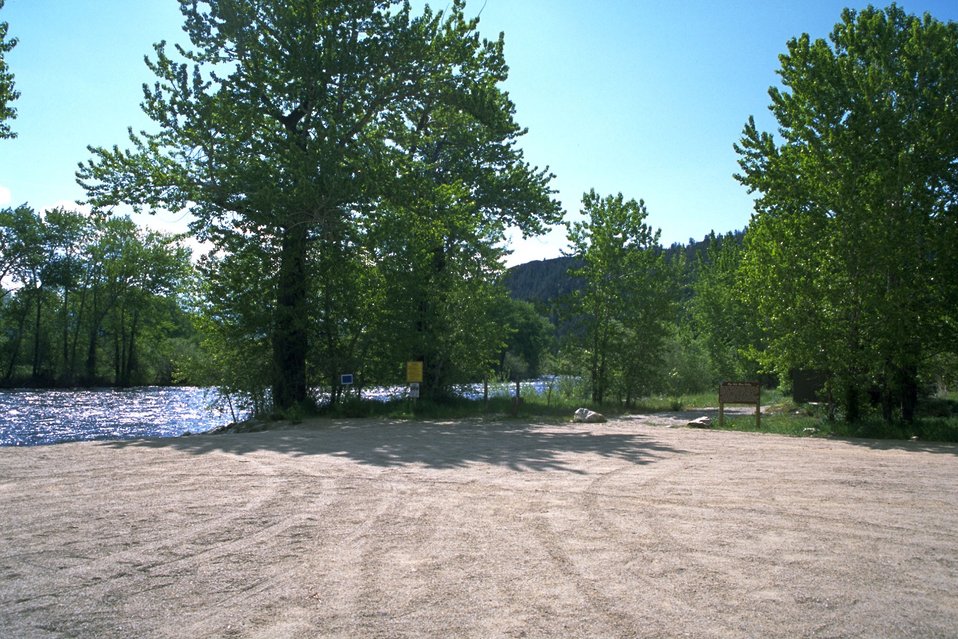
Empty parking lot at Divide Day Use Area